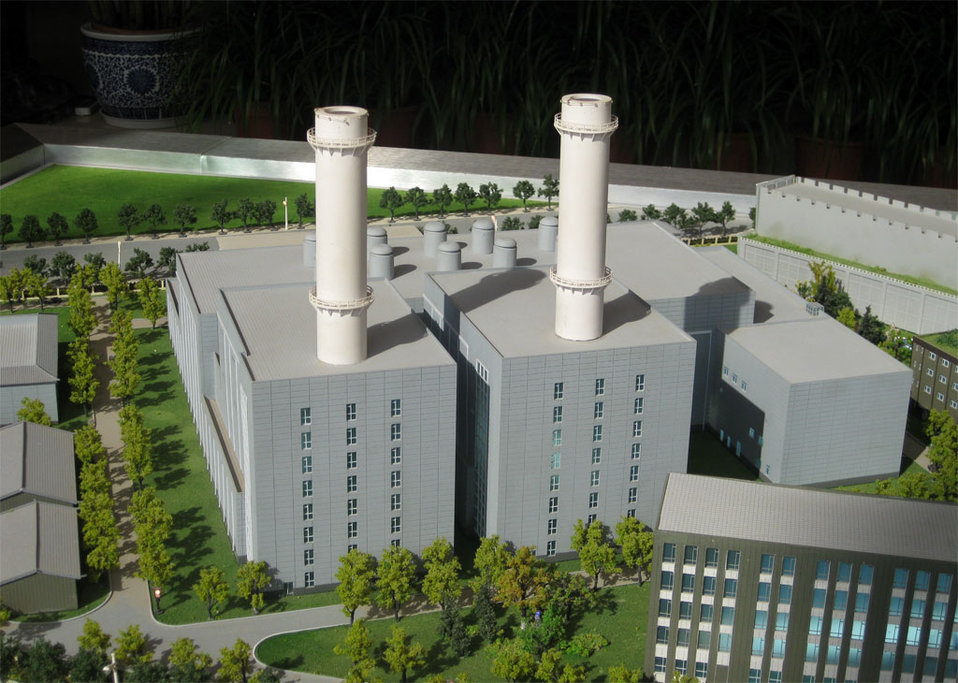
Taiyanggong Gas-Fired Plant Model

Behind the Scenes: A model of the Taiyanggong Gas-Fired Plant in China prior to U.S. Secretary of State Hillary Rodham Clinton's visit February 21, 2009.